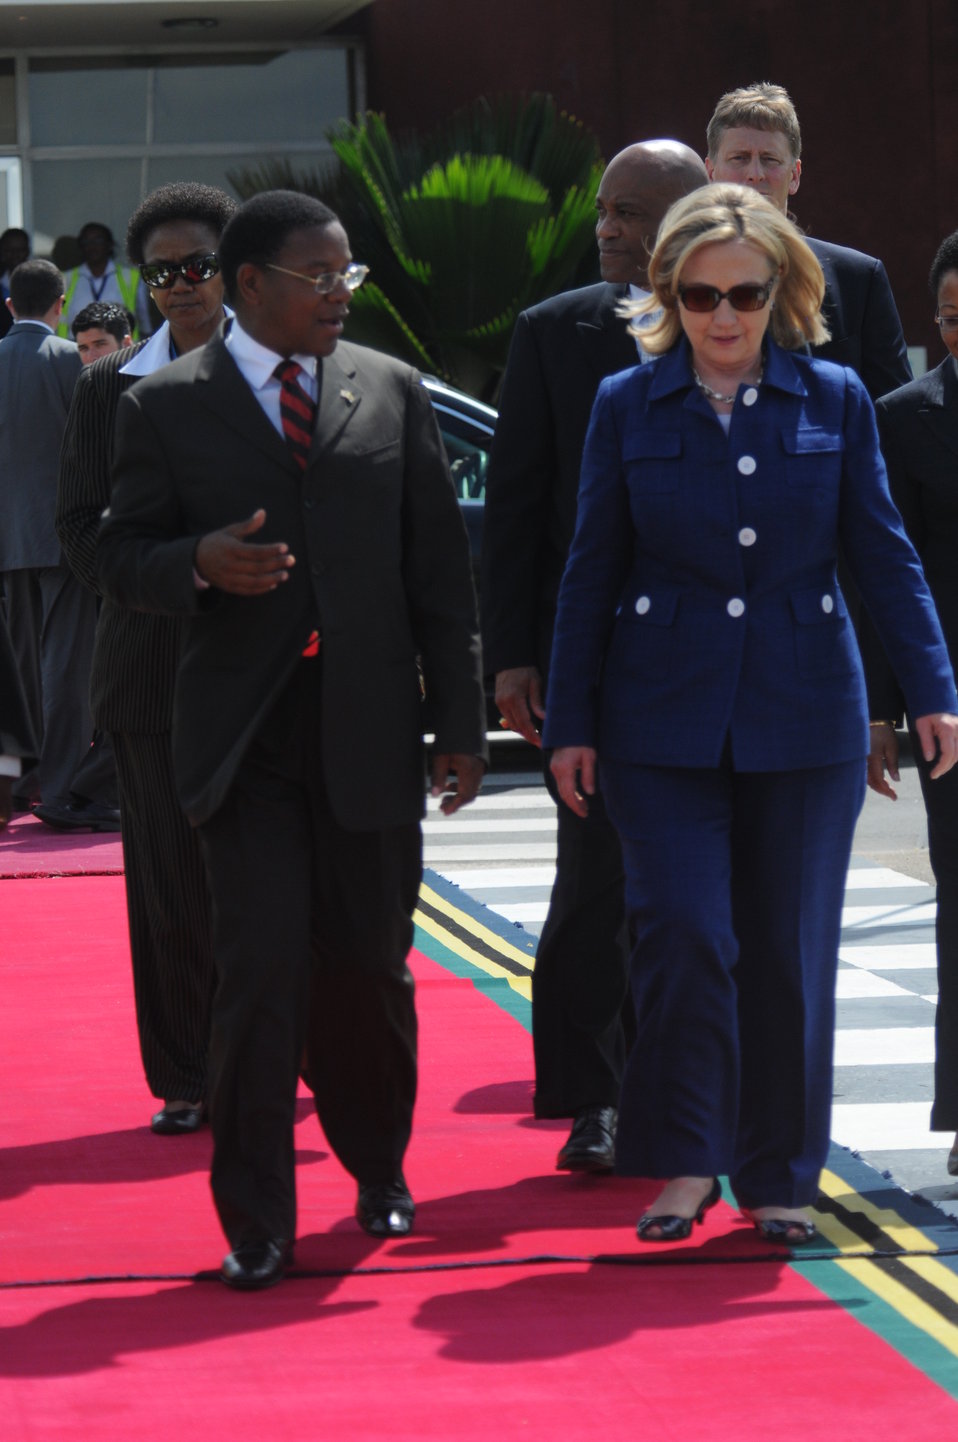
Secretary Clinton Speaks With Tanzanian Foreign Affairs Minister Membe

U.S Secretary of State Hillary Rodham Clinton speaks with Tanzanian Foreign Affairs and International Cooperation Minister Bernard Membe, left, before departing Dar es Salaam, Tanzania, on June 13, 2011.